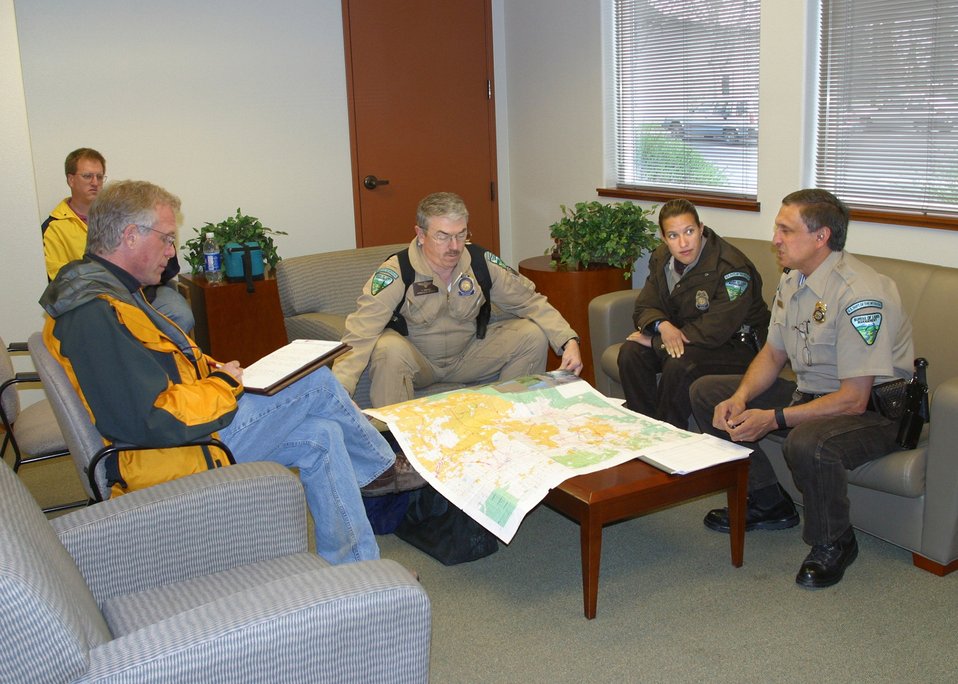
Left to Right: Jim Newman, OPB, Robert Peabody, BLM Volunteer, Tom Teaford, BLM Ranger, Katy Spenger, BLM Ranger, and Roger Crifafi, BLM Ranger discuss areal patrol of BLM public lands in Central Oregon at the Bend, Oregon airport. April 12, 2003. Photo John Craig